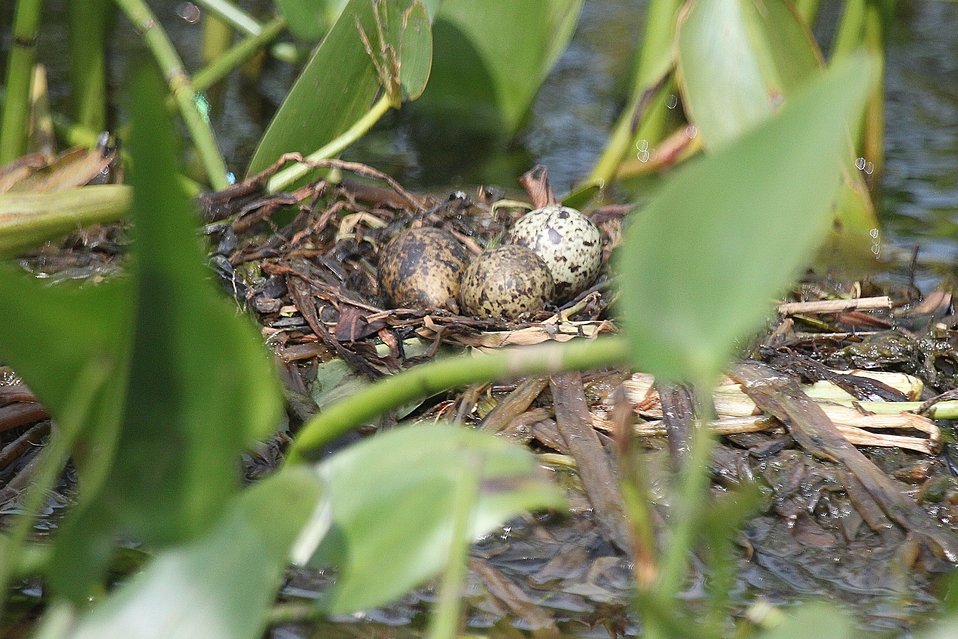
Black tern nest photographed at Missisquoi National Wildlife Refuge